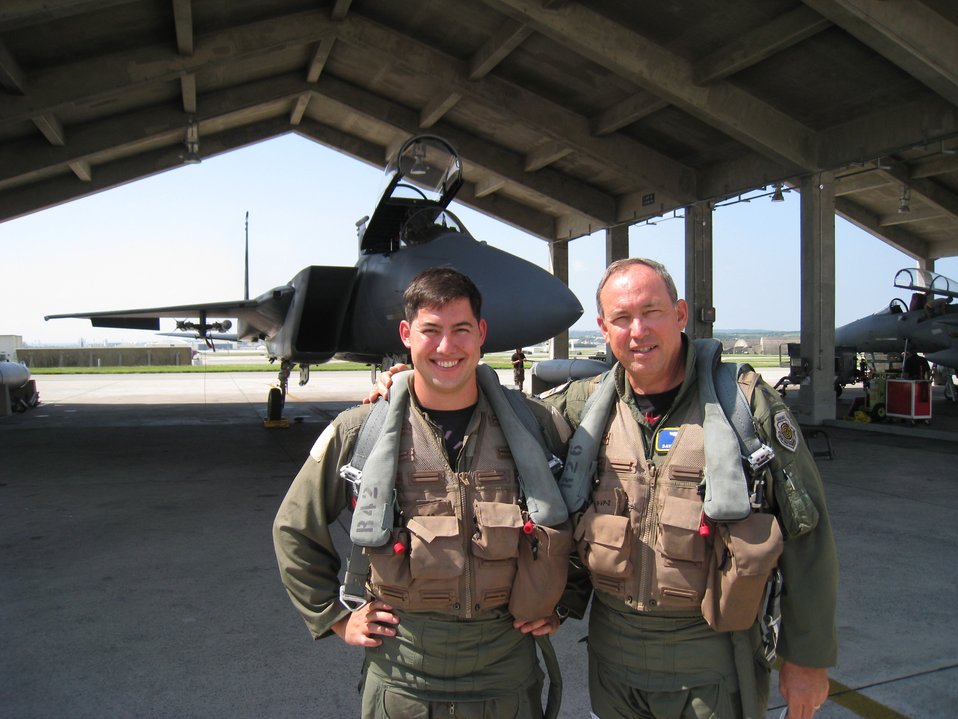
Father and son take to the air

Capt. David Deptula, an F-15 Eagle pilot with the 67th Fighter Squadron and his father, Lt. Gen. David Deptula, Air Force deputy chief of staff for intelligence, surveillance and reconnaissance, prepare for an F-15 flight Sept. 4 at Kadena Air Base, Japan. General Deptula, an F-15 pilot and a former member of the 67th Fighter Squadron himself from 1979-1983, had the rare opportunity to fly with his son while on a trip to visit Air Force ISR professionals in the Pacific region.